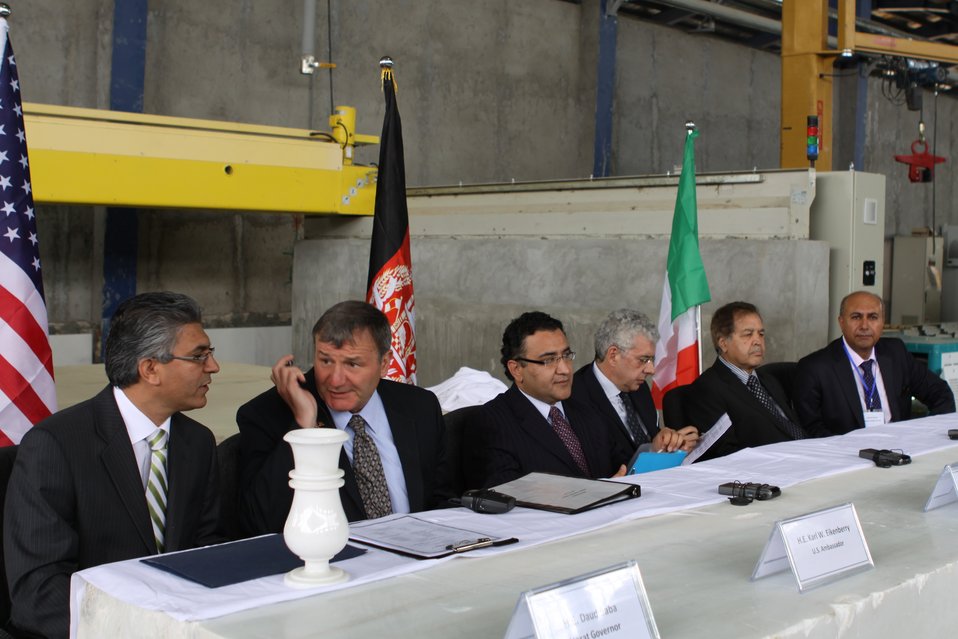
100525 Hirat Marble Conference 125